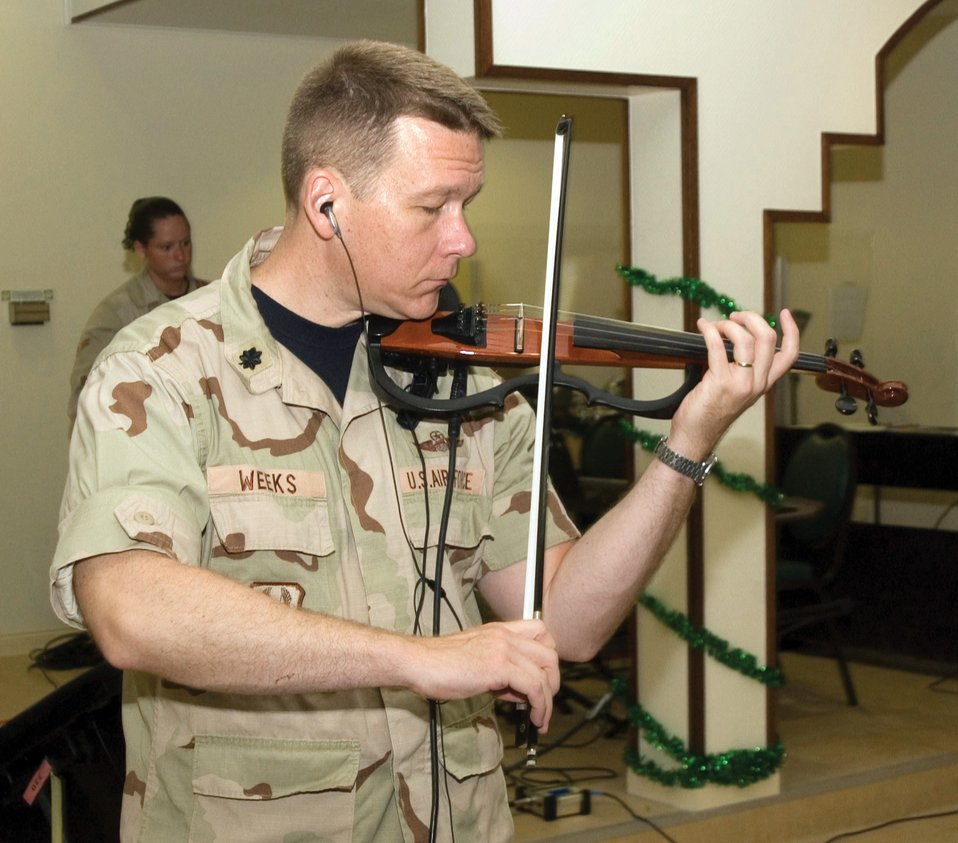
Spirit of service

SOUTHWEST ASIA (AFPN) -- Lt. Col. Michael Weeks plays the violin for the contemporary service at the 379th Air Expeditionary Wing's Victory Chapel here.